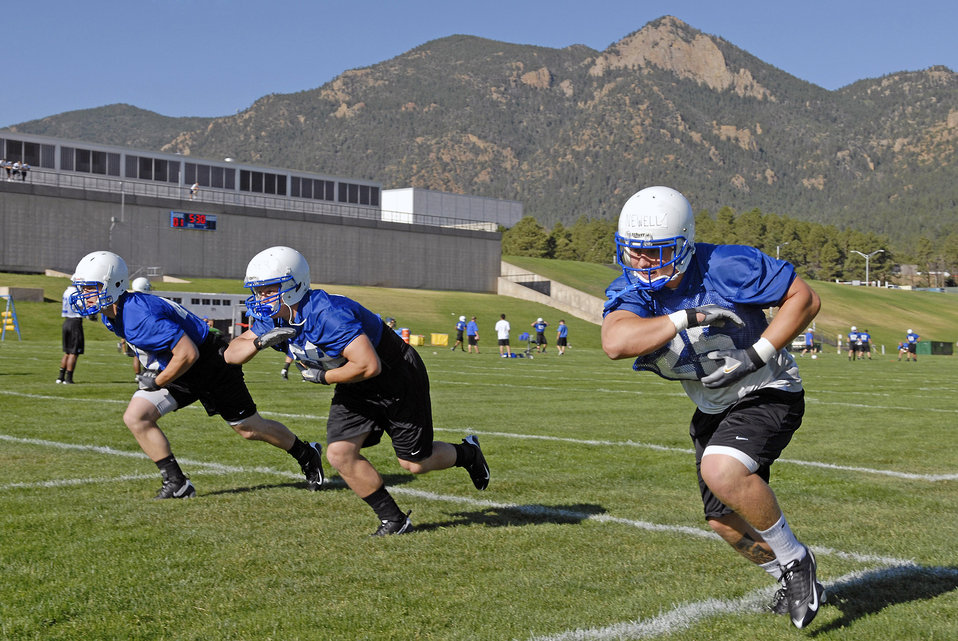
First day of football practice at the Academy

Fullback Cadet 1st Class Todd Newll (25) participates in drills as the Falcons practice in preseason camp July 31 at the U.S. Air Force Academy in Colorado. The Falcons had their best Mountain West Conference record in school history in 2007 with a 9-4 record.